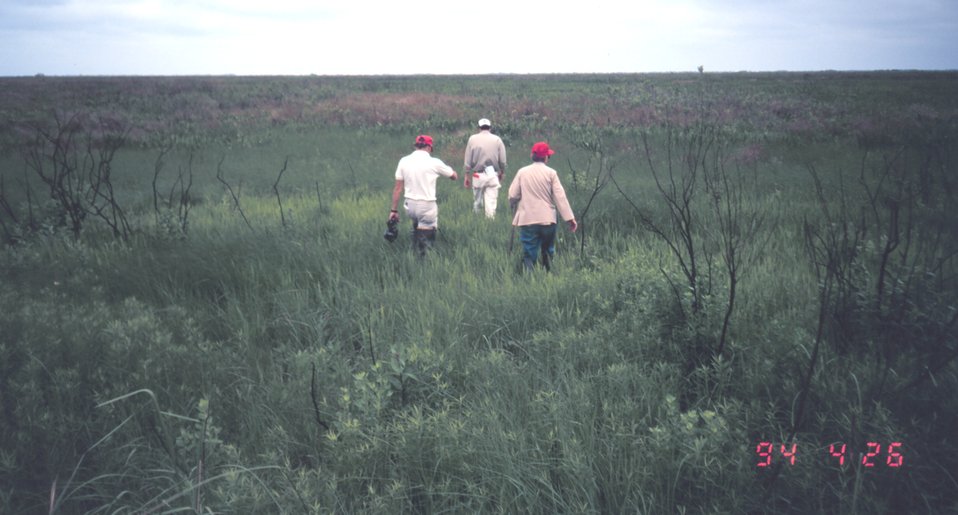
Federal and state scientists evaluating potential restoration project on the Chenier Plain not far from Sabine River and Texas border.